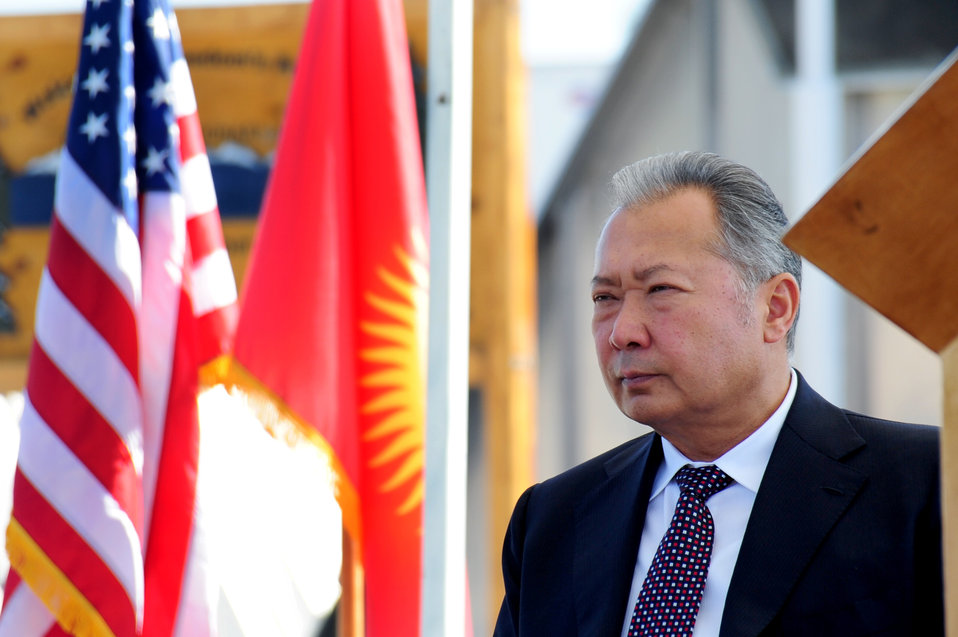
Deployed Airmen honor 9/11 with Kyrgyz president

Kyrgyz President Kurmanbek Bakiyev prepares to speak at a wreath-laying ceremony to honor those who lost their lives in 2001 Sept. 11, 2009, at the Transit Center at Manas, Kyrgyzstan.